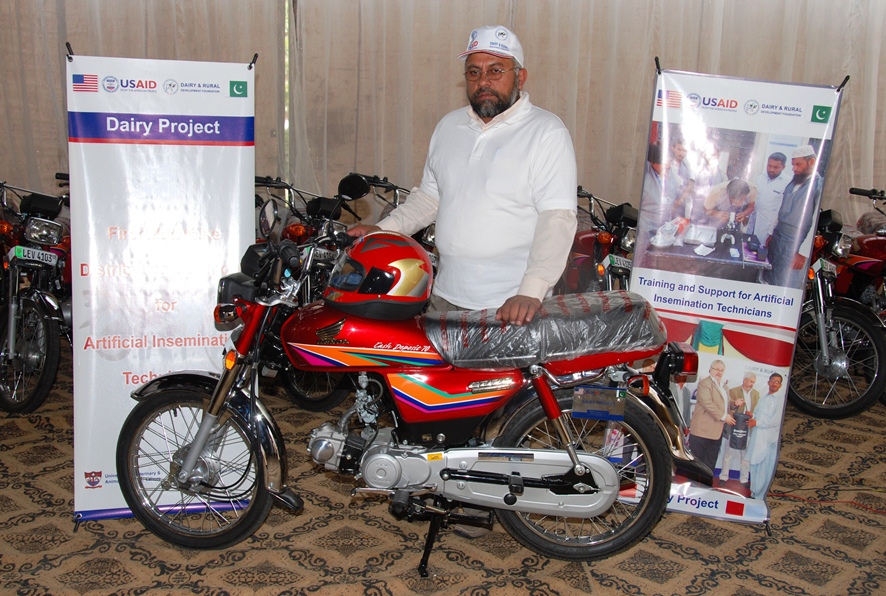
A successfull AI technician with his new motorcycle awarded by USAID Dairy Project4